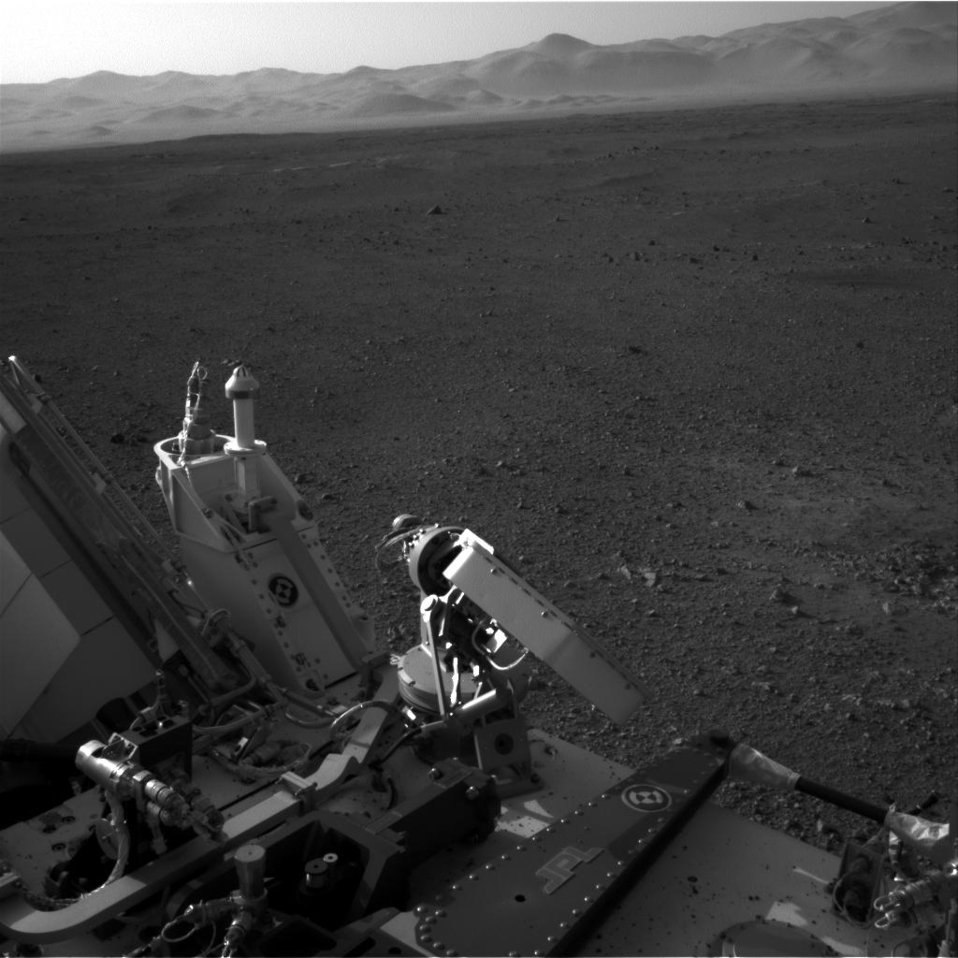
Mars Curiosity Rover

On Monday, August 6, 2012, NASA's Curiosity rover arrived on the surface of Mars to gather geological and environmental data to determine if the planet has ever had the potential to support life. This photo was taken by a navigation camera located toward the back-left of the Curiosity rover, and features part of the rover's nuclear power supply. Beyond the rover itself, Curiosity's exploration reveals the desert-like terrain of Mars's Gale Crater.